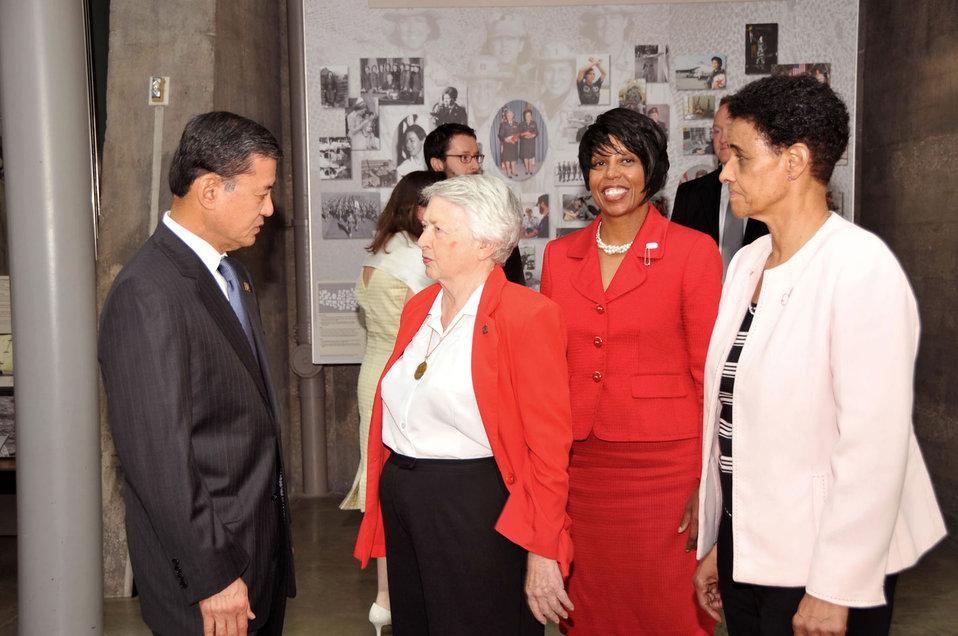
VA's Forum on Women Veterans

Veterans Affairs Secretary Eric K. Shinseki chats with women veterans July 29, 2010, attending a special forum at the Women in Military Service for America Memorial in Arlington, Va.